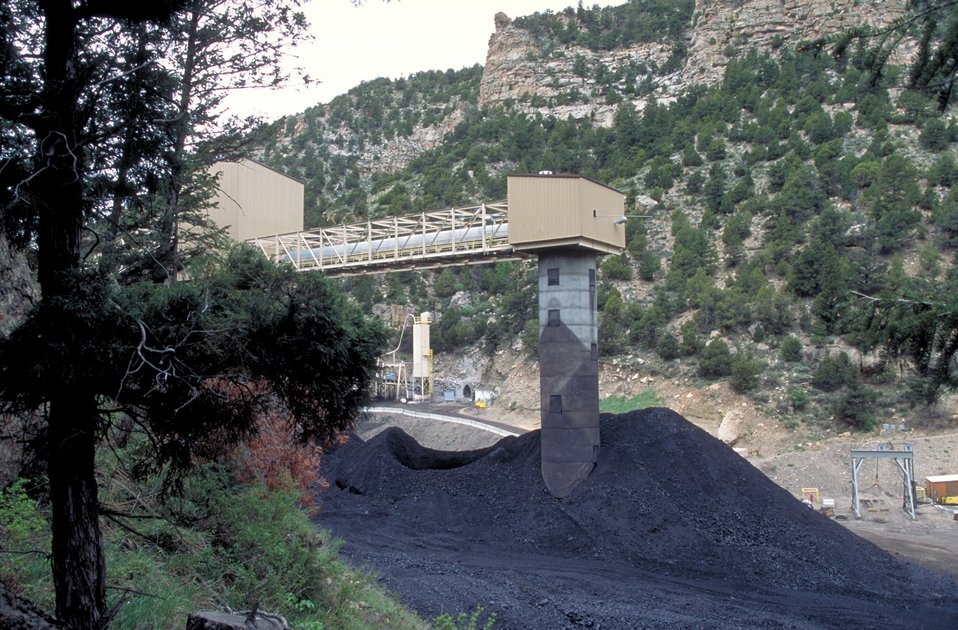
Coal production near Price, Utah.